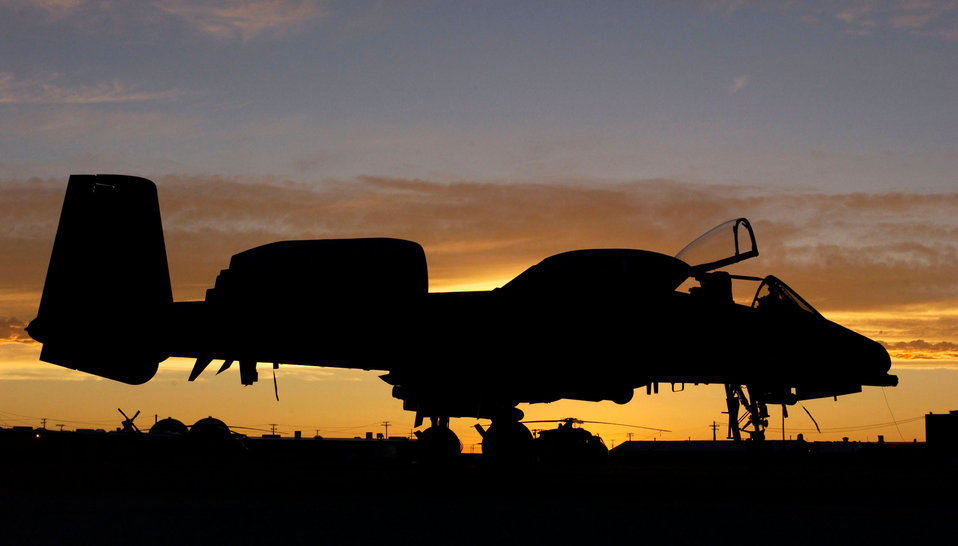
Thunderbolt II at rest

NAVAL AIR STATION FALLON, Nev. -- An Air Force A-10 Thunderbolt II stands ready to provide close-air support here as part of Desert Rescue XI. The aircraft is from the Connecticut Air National Guard's 118th Fighter Squadron. The joint-service combat search and rescue training exercise simulates downed aircrews behind enemy lines and allows airmen to practice rescue-related missions.